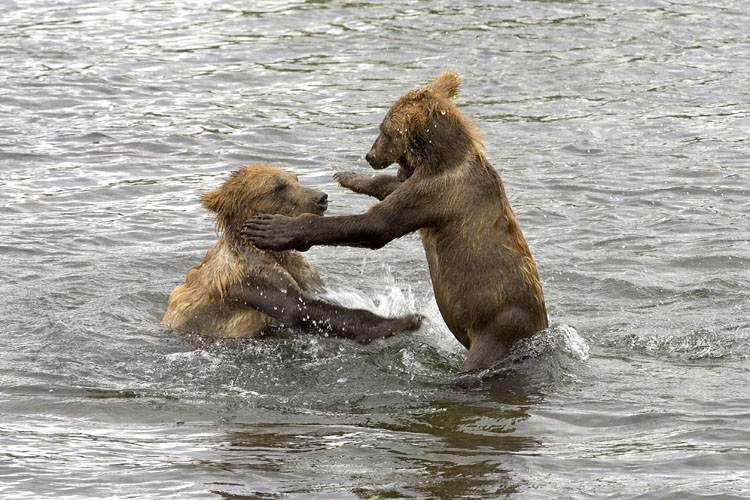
Kodiak Brown Bears

Playful Kodiak Bears